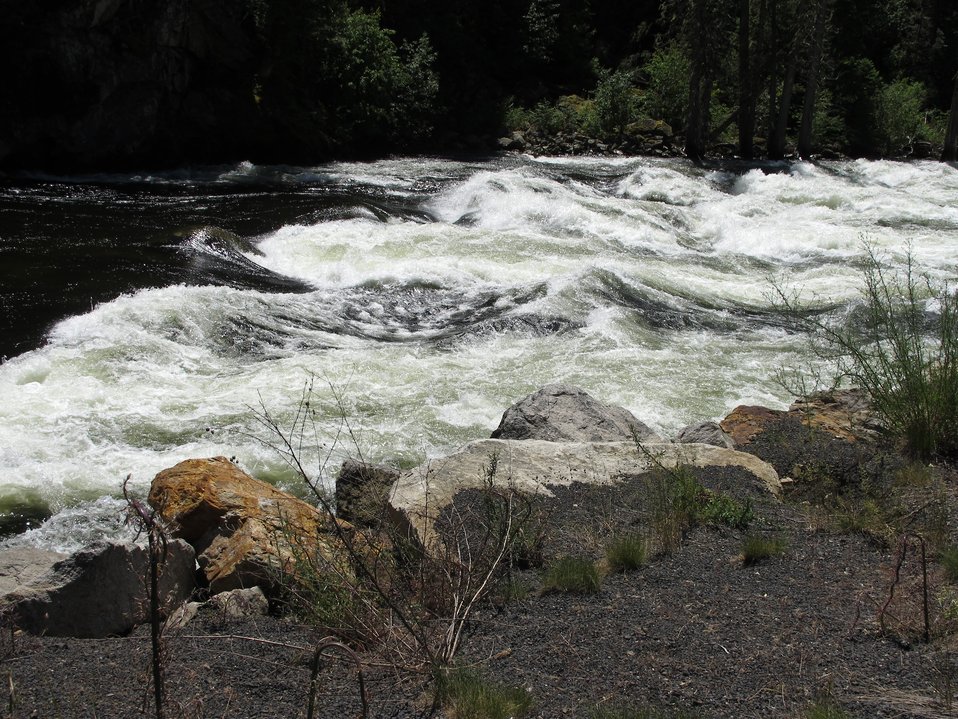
Big water on the Lochsa River